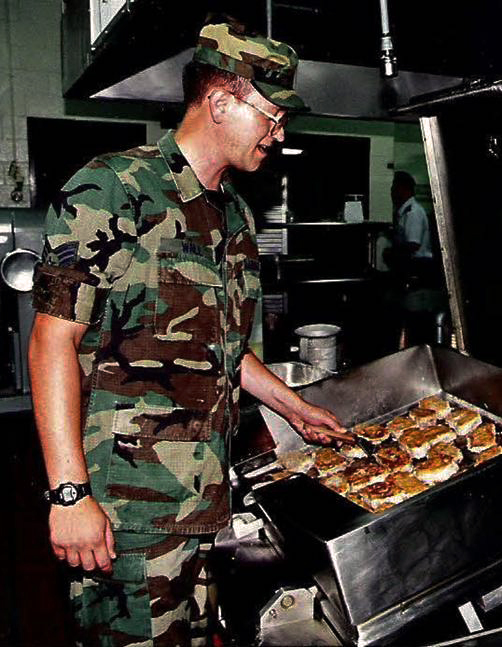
Tom Wall, Training Technician at the National Conservation Training Center, served as a Sergeant in Active Duty Air Force in Minot, North Dakota, from August 1986 to August 1990. He also served in the Air Force Reserves for eight years in Milwaukee, Wisconsin, and attained the rank of Technical Sergeant.